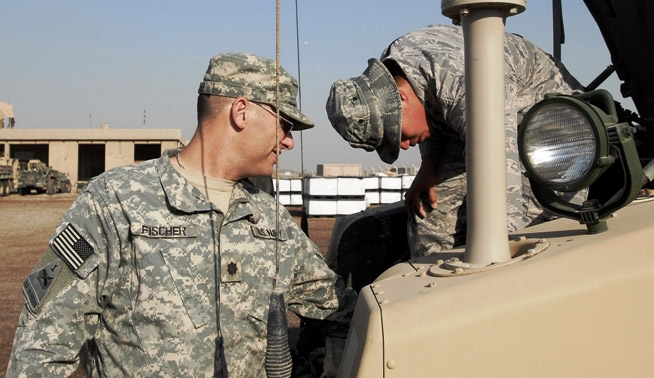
Electronic warfare officers keep Soldiers safe

Navy Cmdr. Ed Fischer (left) and Air Force 1st Lt. E.J. Wong inspect a Warlock-equipped Humvee Nov. 21 at Camp Striker, Iraq. The Warlock system is a countermeasure against roadside bombs.